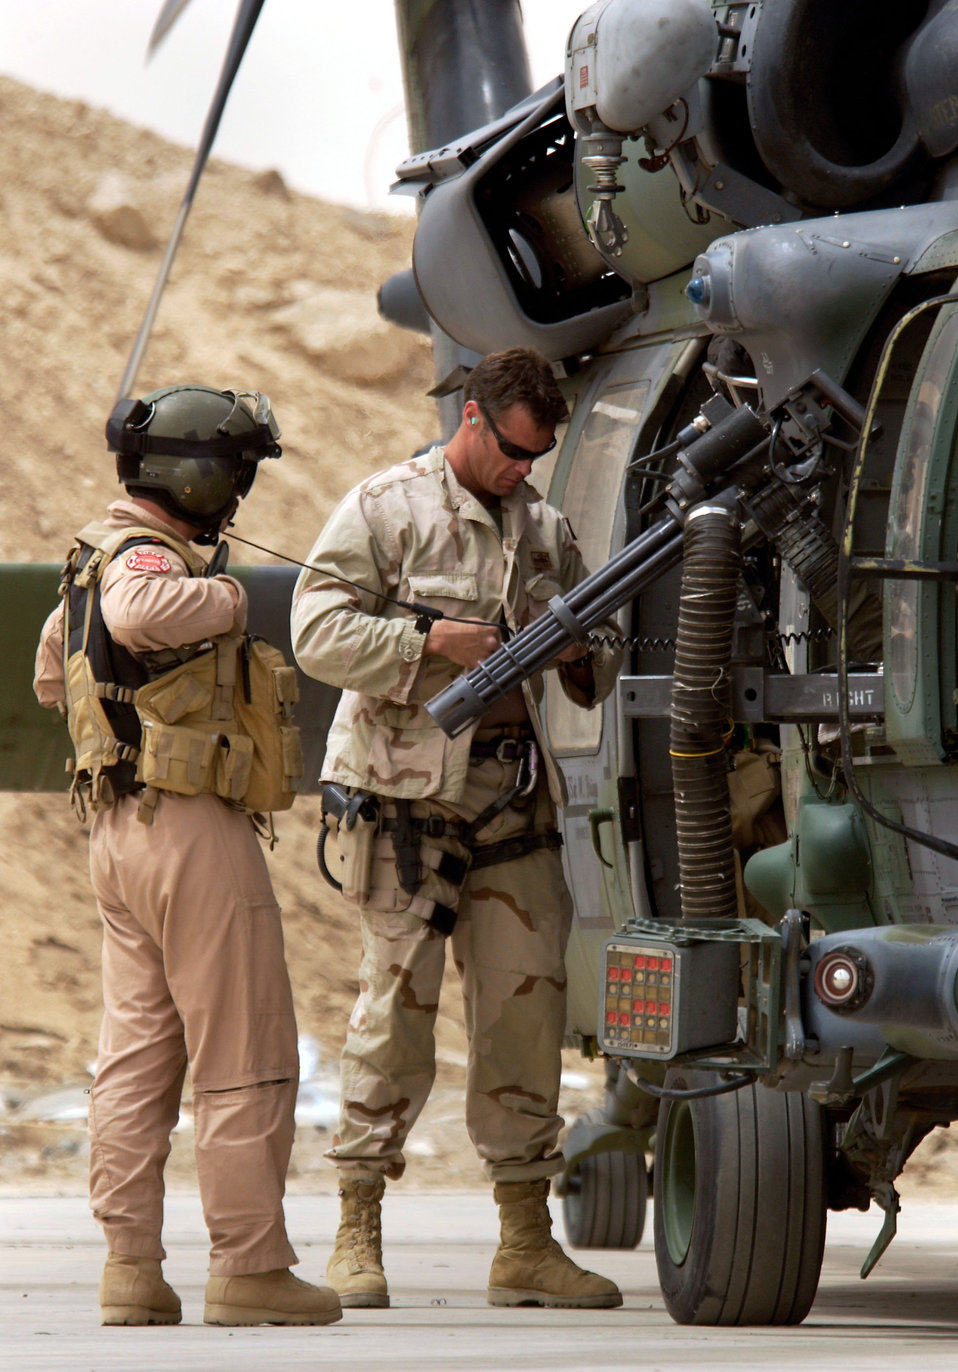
Gettin' ready

OPERATION IRAQI FREEDOM -- An HH-60G Pave Hawk helicopter crew from the 301st Rescue Squadron prepare to go on a mission April 8 at a forward deployed location in southern Iraq during Operation Iraqi Freedom.